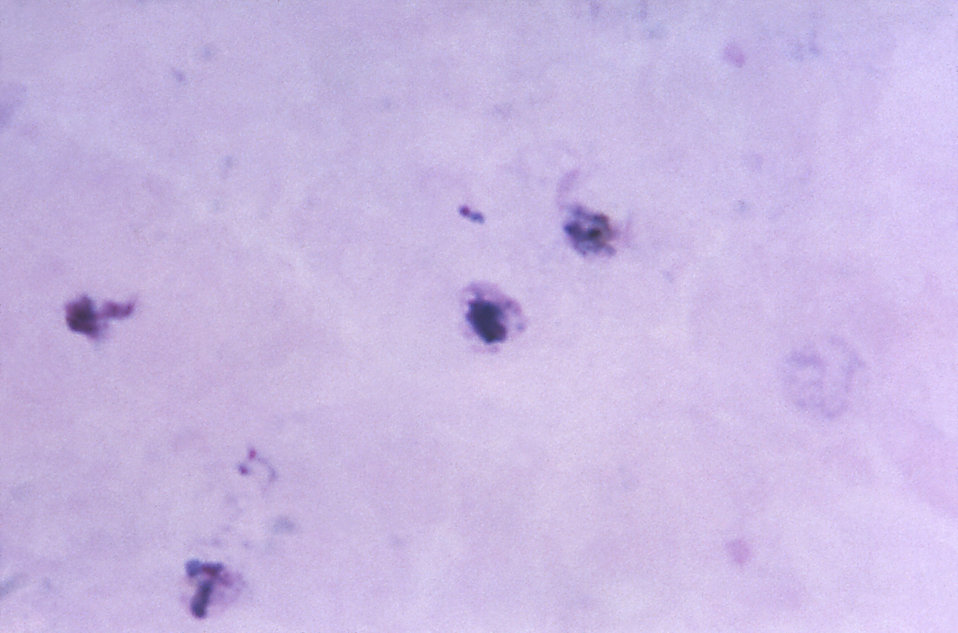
This micrograph of a thick film depicts an immature P. vivax schizont containing three chromatin masses; Magnified 1125x.